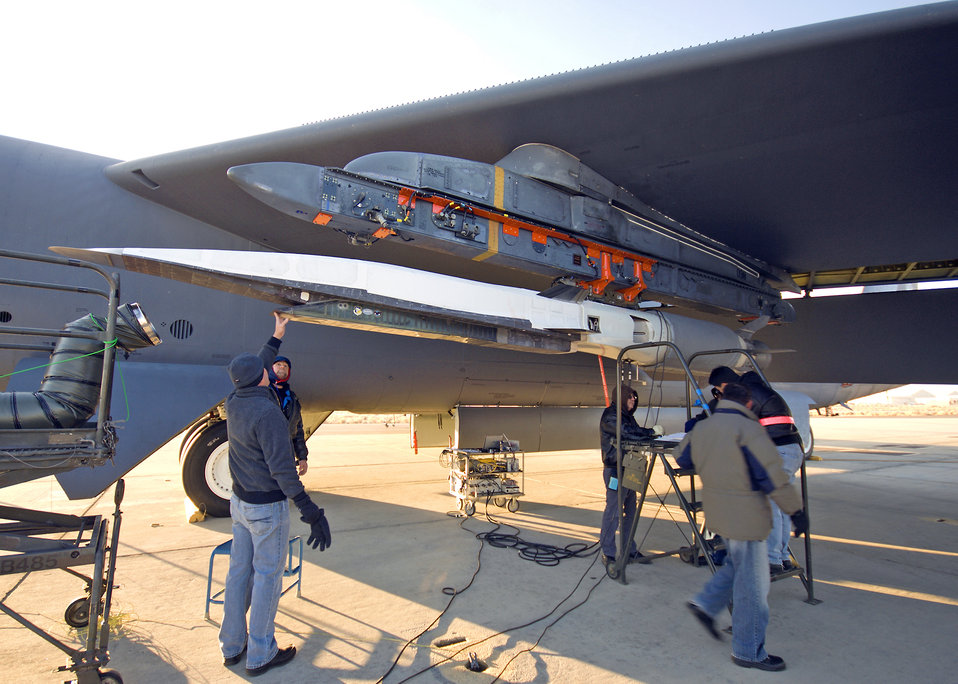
YF-22 arrives forfor display in AFFTC museum

Crewmembers and program officials prepare the X-51A WaveRider for a captive carry flight under an Air Force Flight Test Center B-52H Stratofortress Dec. 9, 2009, at Edwards Air Force Base, Calif. The captive carry mission is part of preparations being made prior to the X-51's first powered hypersonic flight in early 2010.